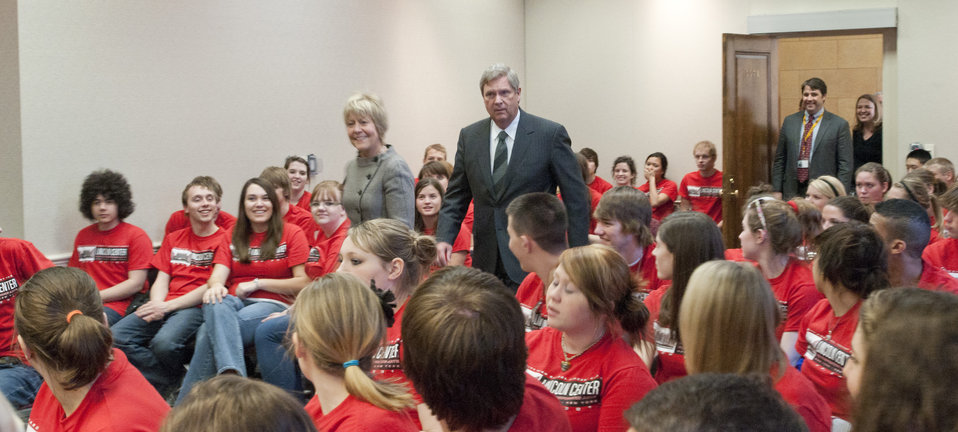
U.S. Department of Agriculture (USDA) Secretary Tom Vilsack and his wife Christie meet with more than 90 students that came from Mason City High School, Mason City, Iowa to the USDA headquarters in Washington, D.C. on March 25, 2011. Secretary Vilsack talked about the mission of the USDA, the many places around the world that the USDA supports, as well as mentioning some noted Iowans in government and agriculture history. The Vilsacks answered several questions from the students, from “What is your day like,” to “What are the major problems USDA faces?”